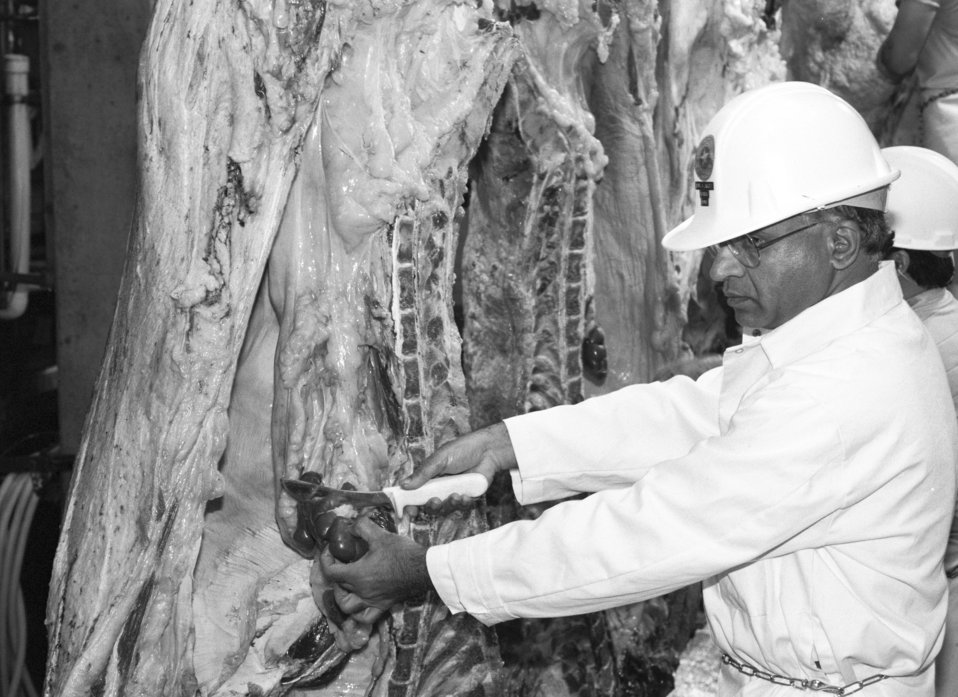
U.S. Department of Agriculture (USDA) Food Safety Inspection Service (FSIS) inspectors inspect beef using a Streamline Inspection System (SIS) at a processing plant in Plainview, TX on January 22, 1991.